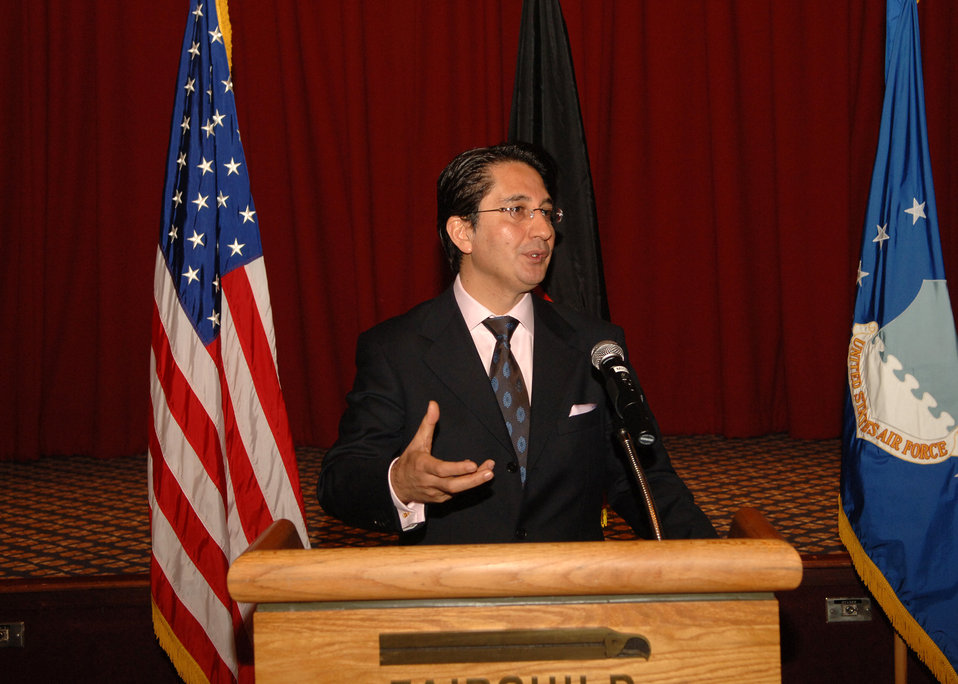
Progress in Afghanistan

Said Jawad, Afghan ambassador to the United States, speaks to Airmen March 1 at Club Fairchild at Fairchild Air Force Base, Wash. about progress being made in his home country. The ambassador visited Spokane this week at the invitation of the World Affairs Council of Spokane.